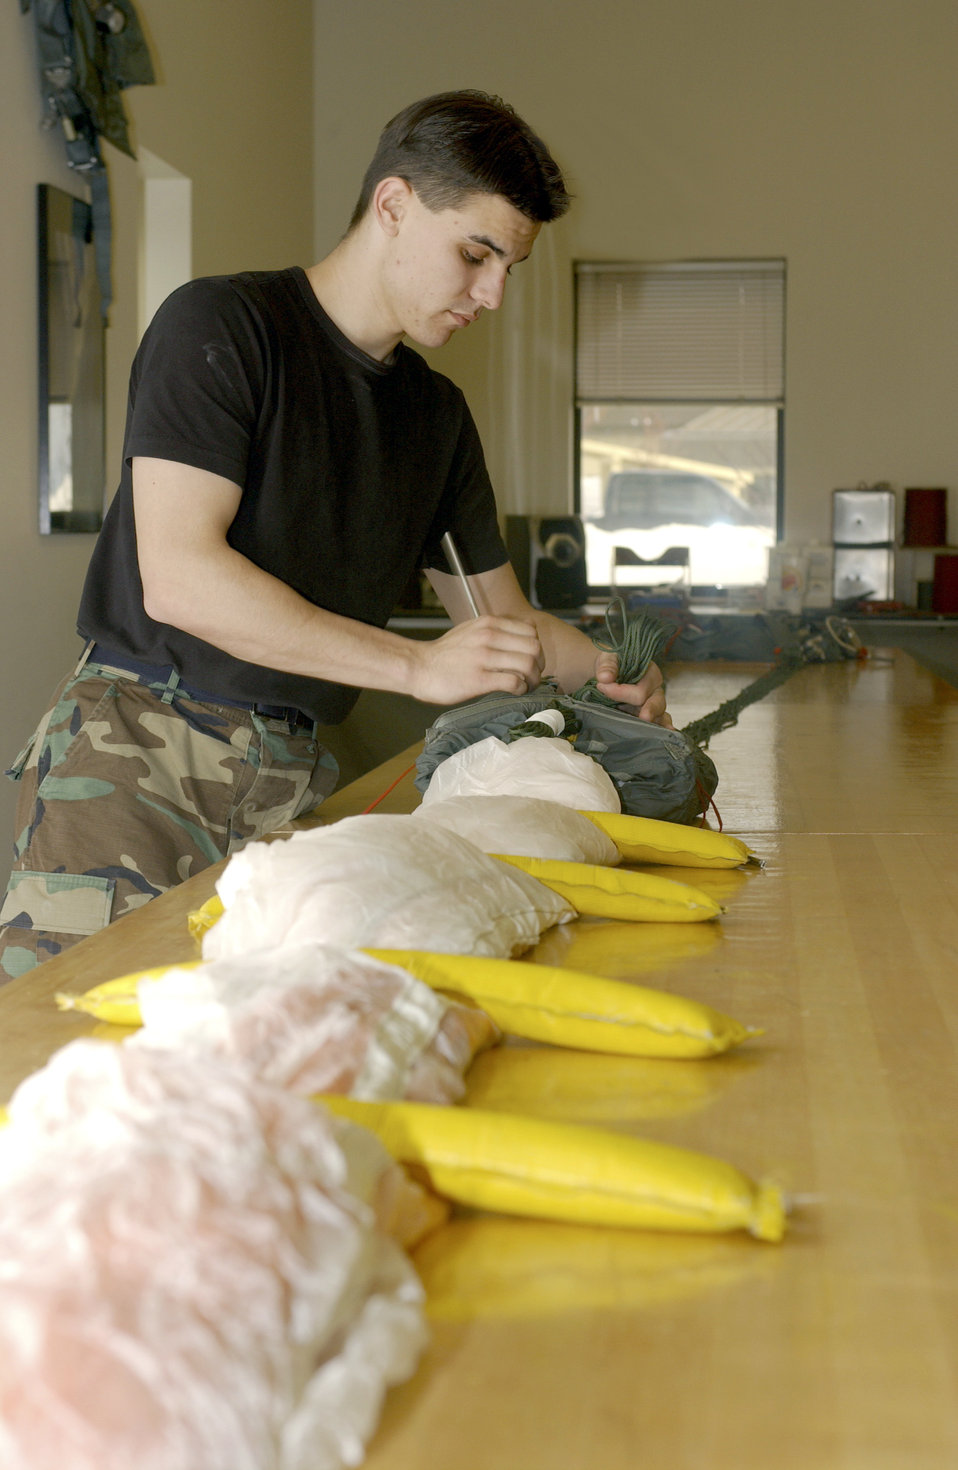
Leader of the pack

FAIRCHILD AIR FORCE BASE, Wash. (AFPN) -- Airman 1st Class Jason Johnson repacks a parachute used by KC-135 Stratotanker crews in case of emergency during flight. The parachute, made of nylon, can be used at altitudes of up to 15,000 feet. Airman Johnson is a survival equipment specialist from the 92nd Maintenance Squadron here.